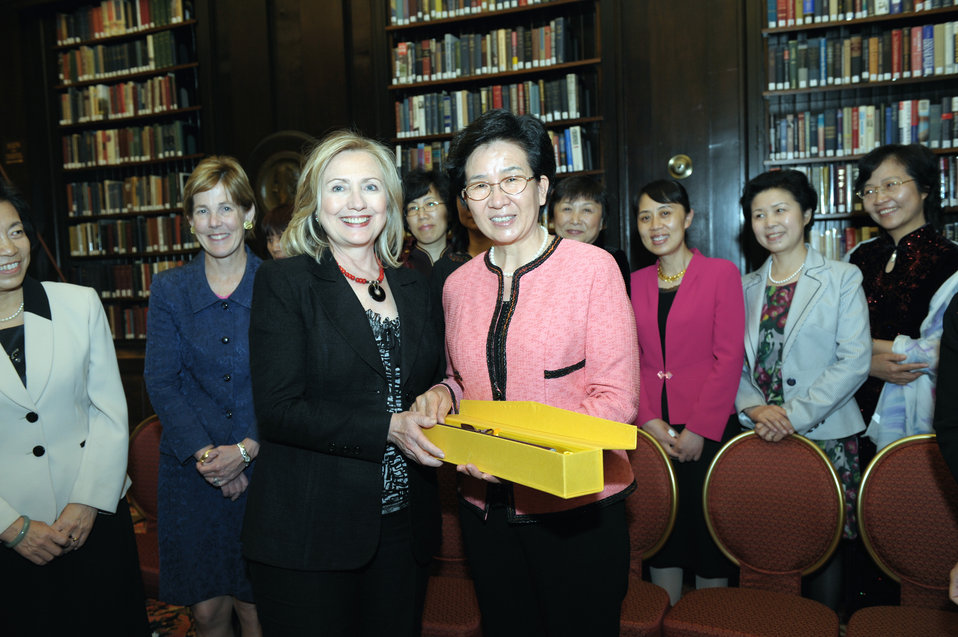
Secretary Clinton and Ambassador Verveer Meet With Participants in the Yale Chinese Women's Leadership Development Program

U.S. Secretary of State Hillary Rodham Clinton and Ambassador-at-Large for Global Women’s Issues Melanne Verveer meet with participants in the Yale Chinese Women’s Leadership Development Program, the first of several public-private partnerships formed under the auspices of the U.S.-China Women’s Leadership Exchange and Dialogue (Women-LEAD), at the Metropolitan Club in Washington, D.C., on May 10, 2011.